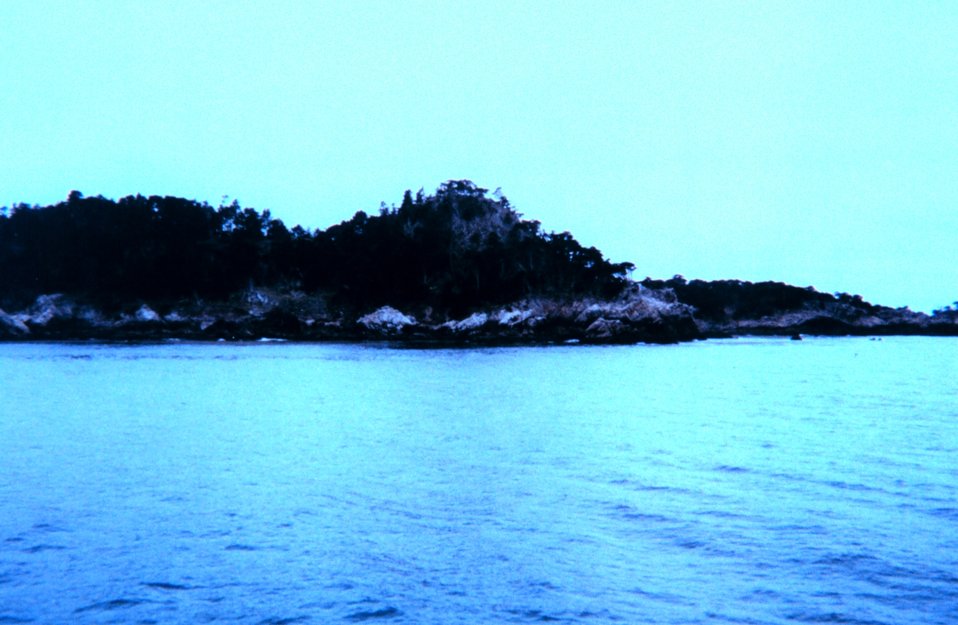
Portion of composite image of Point Lobos.